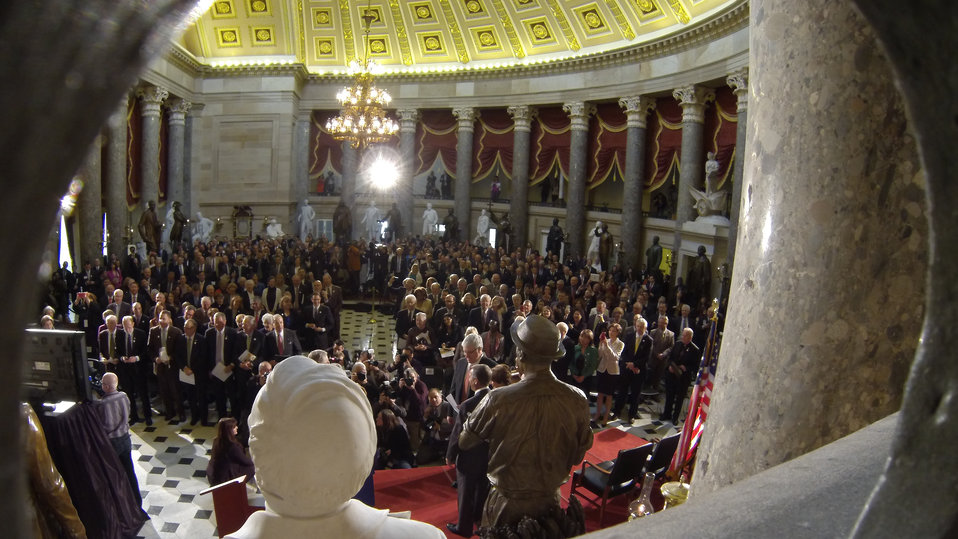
The Dr. Norman E. Borlaug statue is unveiled in the National Statuary Hall at the U. S. Capitol in Washington, D.C. on Tuesday, Mar. 25, 2014. Seen in front of statue is Mr. Bill Borlaug (son of Dr. Borlaug). Also unveiling the statue is Minority Leader of the House of Representatives Nancy Pelosi, Agriculture Secretary Tom Vilsack, Speaker of the House of Representatives John Boehner, Iowa Governor Terry Branstad and Majority Leader of the U.S. Senate Harry Reid. Today commemorates 100 years since Dr. Borlaug’s birth. Through his scientific and humanitarian achievements, Nobel Laureate Dr. Norman E. Borlaug (1914-2009) has been credited with saving millions of people from starvation in developing countries. His collaborative work with scientists in Mexico on a high-yielding, disease resistant dwarf wheat sparked the Green Revolution of the 1960s. The National Statuary Hall Collection in the U.S. Capitol is composed of statues donated by individual states to honor persons notable in their history.